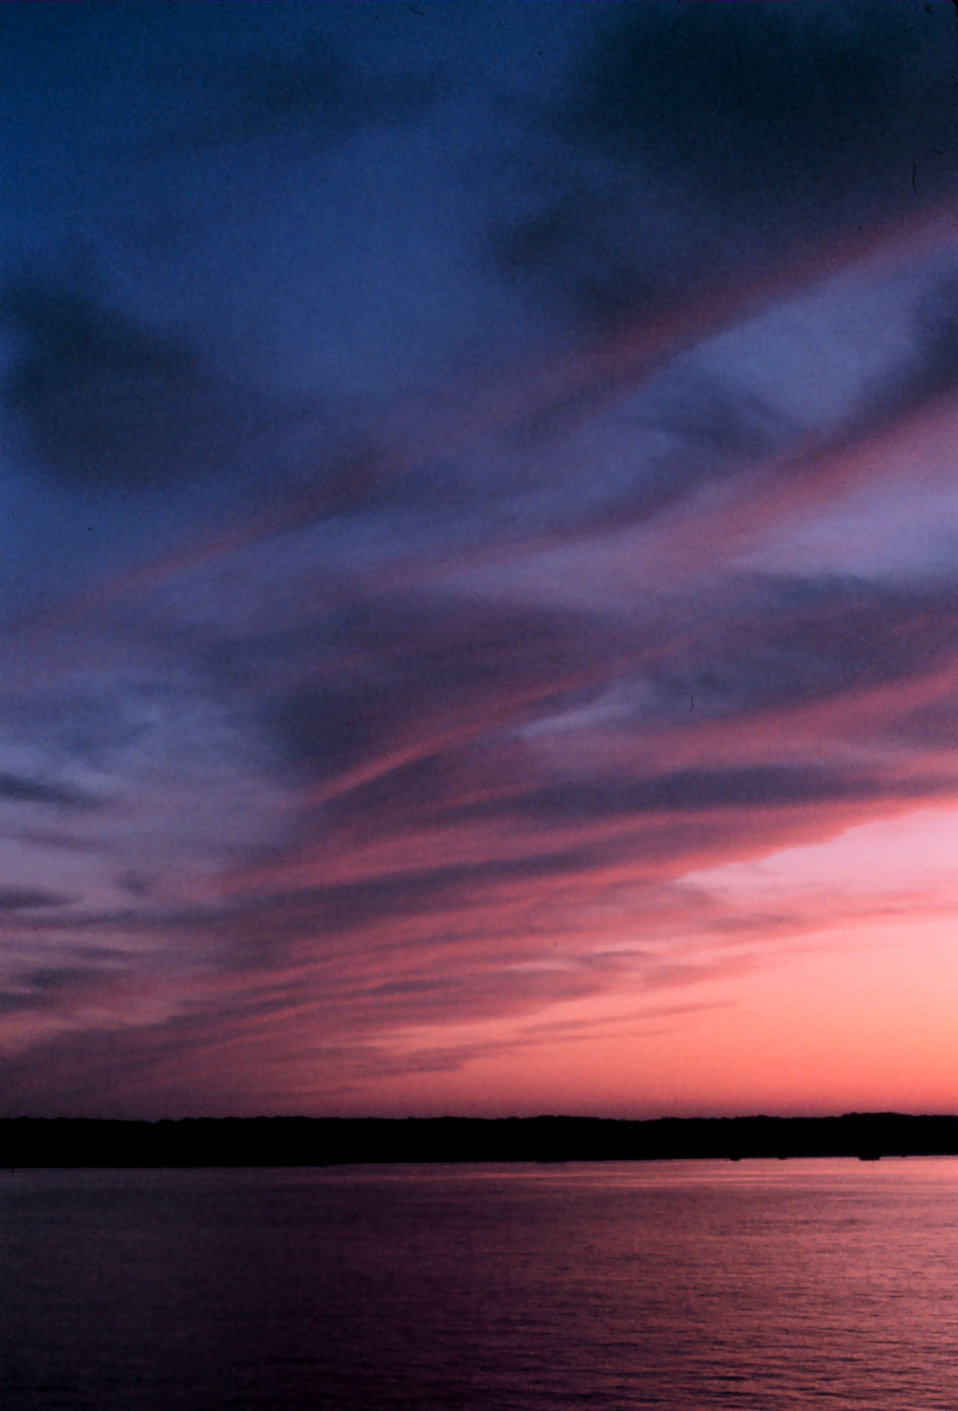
Sunset at sea south of Nantucket